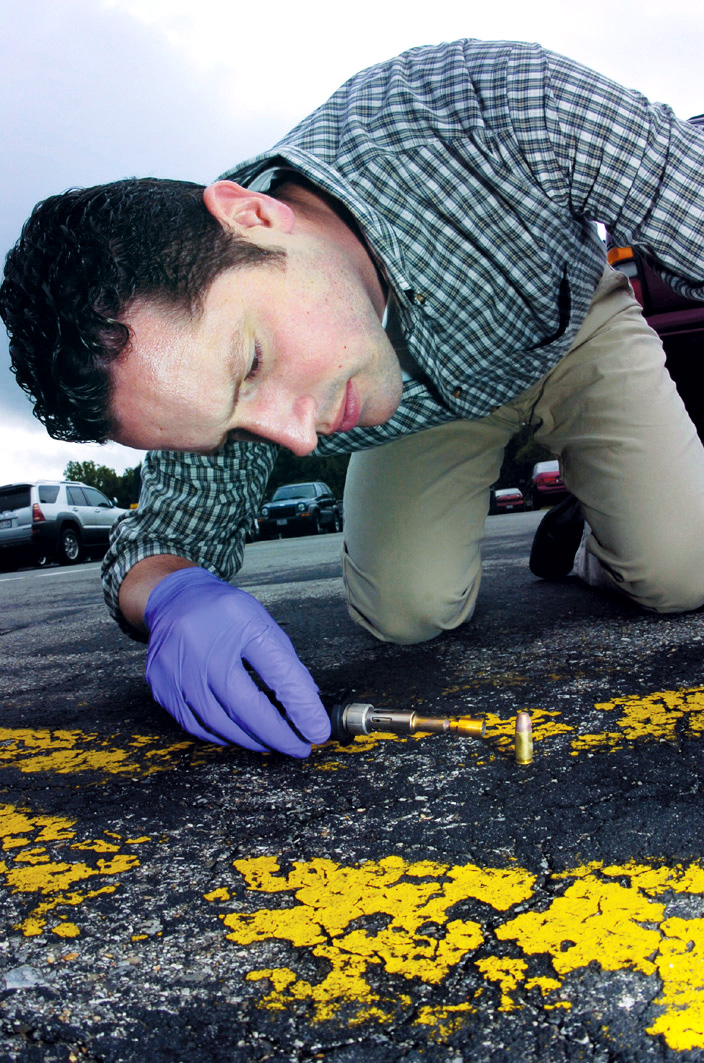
Forensic experts identify keys to crimes

Special Agent Jeremy Gage deposits a gluing agent on a bullet shell to preserve a fingerprint on the shell. Agent Gage is a forensic science consultant with the Air Force Office of Special Investigations' 33rd Field Investigations Squadron.